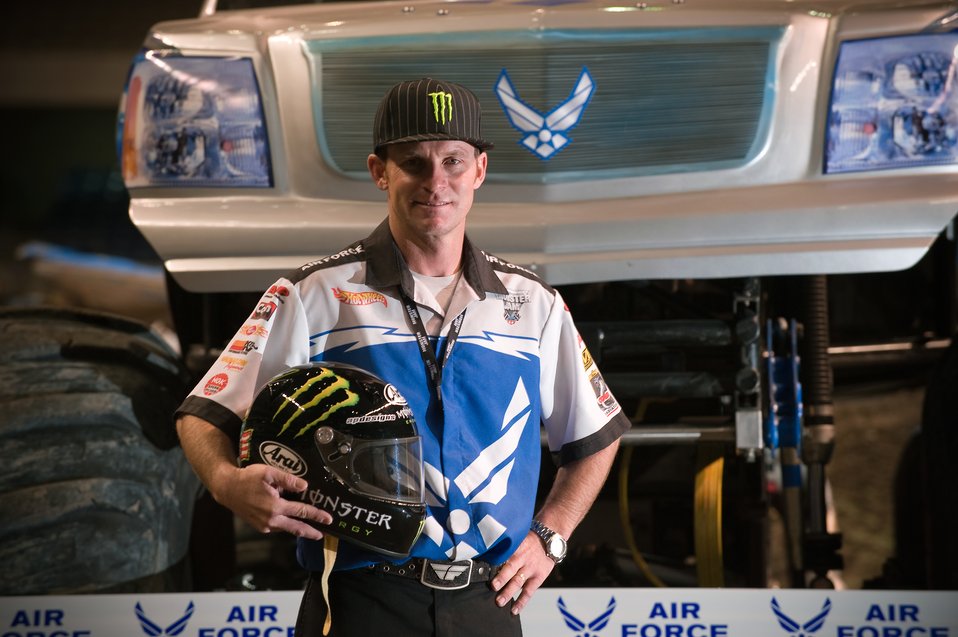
AF flies high at Monster Jam

Air Force monster truck driver Damon Bradshaw stands in front of Afterburner monster truck Jan. 11 prior to the start of the 2009 Monster Jam at the Alamodome in San Antonio. Mr. Bradshaw took second during the competition with fast lap times and freestyle performances that had the crowd of approximately 45,000 up and cheering. Afterburner's 540 cubic-inch Merlin supercharged racing V-8 engine churns out 1,425 horsepower. Mr. Bradshaw, in his 3rd season, demonstrated that he had mastered the application of power by launching the 10,000-lb vehicle more than 40 feet in the air, thrilling the crowd. Afterburner is equipped with 66